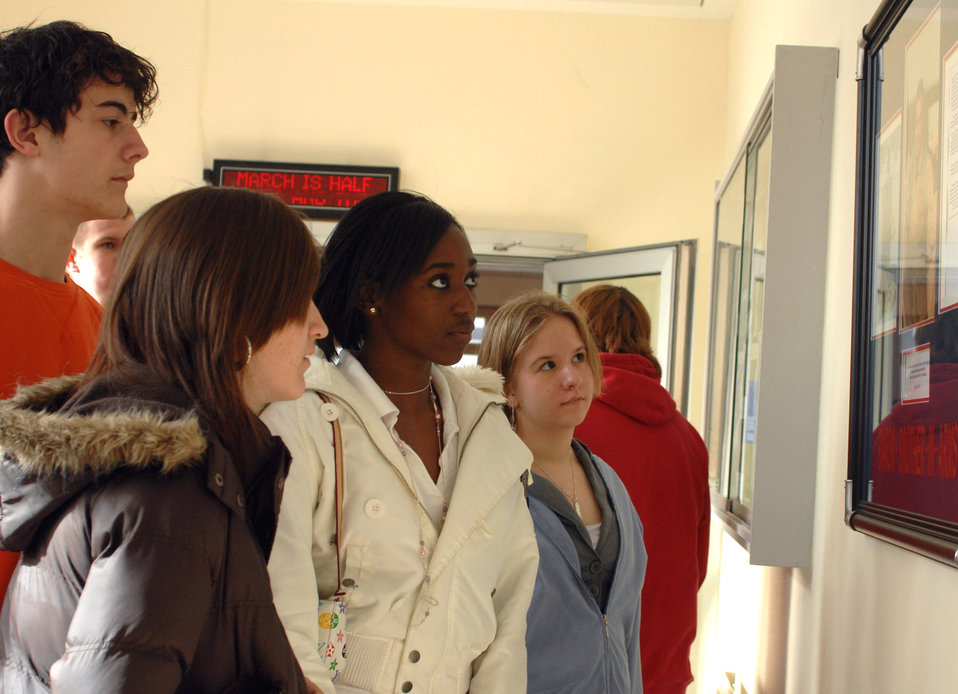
School honors fallen Airman, former student

Bitburg High School students examine a commemorative plaque hung in the memory of Maj. Troy Gilbert April 5 at the school near Spangdhalem Air Base, Germany. Major Gilbert, a BHS graduate, lost his life while serving in support of Operation Iraqi Freedom Nov. 27, 2006.